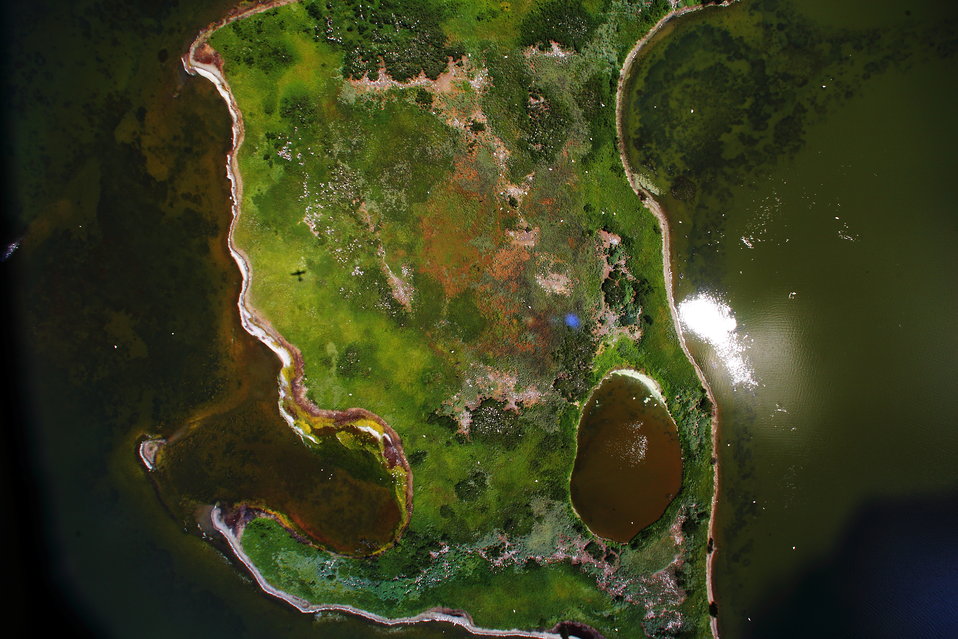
Aerial view of large nesting island

Besides pelicans, the islands also host nesting; great egrets, cattle egrets, snowy egrets, black-crowned night Herons, California and ring-billed gulls, double-crested cormorants, caspian terns, white-faced ibis; and more.